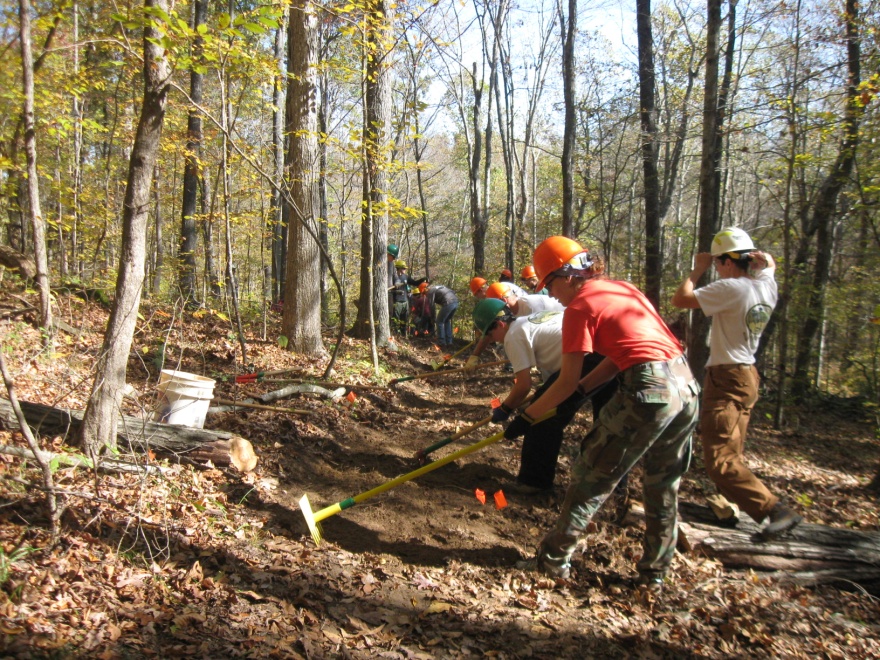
National Public Lands Day DenTrail

National Public Lands Day is the nation's largest, single-day volunteer effort for public lands. Volunteers perform trail maintenance on a National Forest.